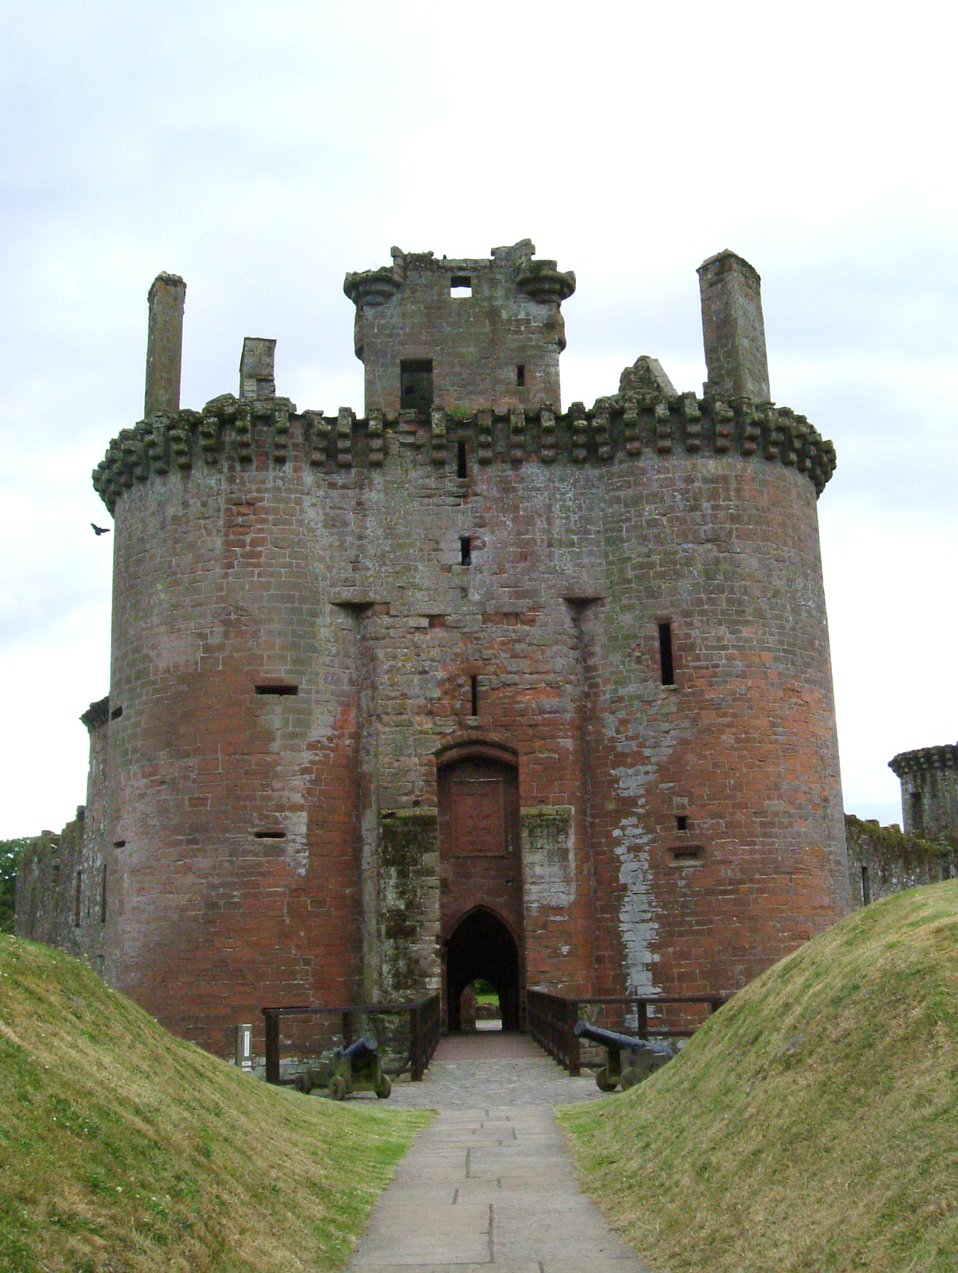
Deutsch: Caerlaverock Castle, Haupteingang, Gatehouse (Nordtürme)